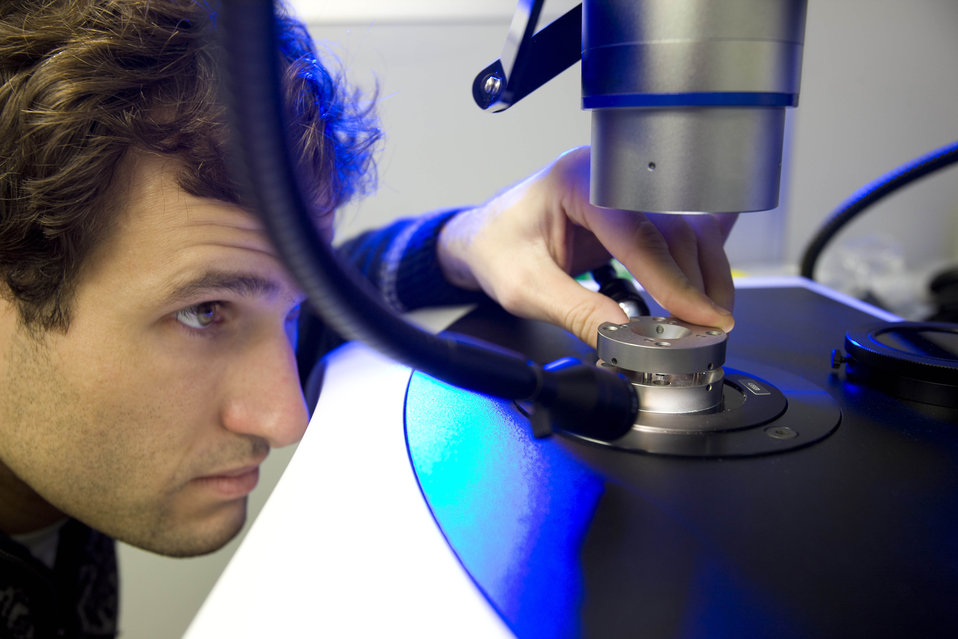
Researcher in Oak Ridge